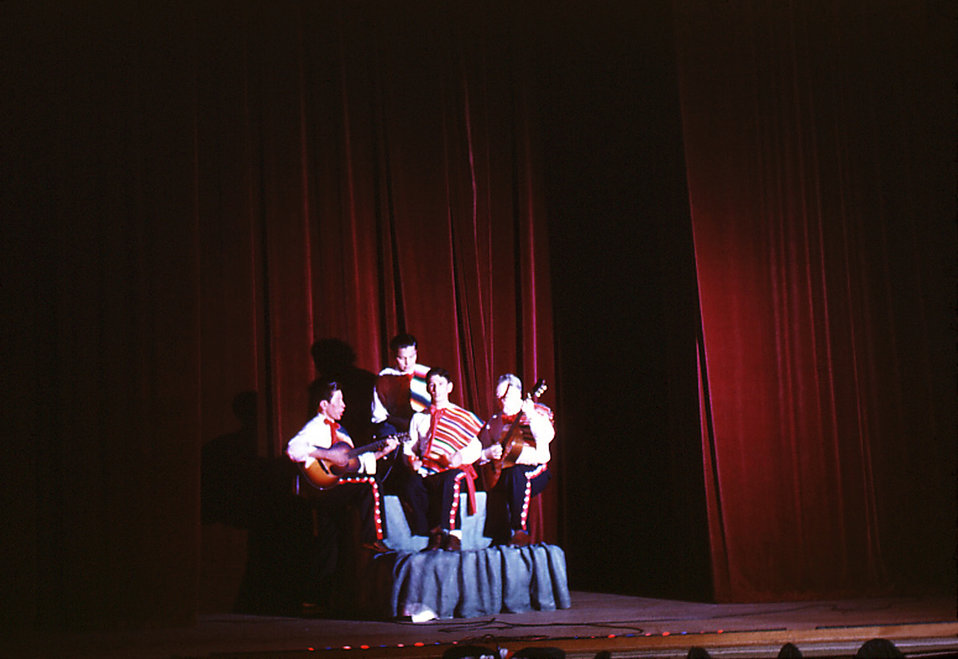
This historic image depicted a number of the Carville, Louisiana Leprosarium Mexican patients during a stage production celebrating Mexico's history on Mexican Independence Day. In this particular instance, a number of dancers accompanied the quartet during the performance.The National Hansen's Disease Museum's (NHDM) mission is to collect, preserve and interpret the medical and cultural artifacts of the Carville Historic District. In addition, we want to promote the understanding, identification, and treatment of Hansen's Disease (leprosy). We fulfill this mission by creating and maintaining museum displays, traveling exhibits, publications and a website in order to educate and inform the public on all levels.